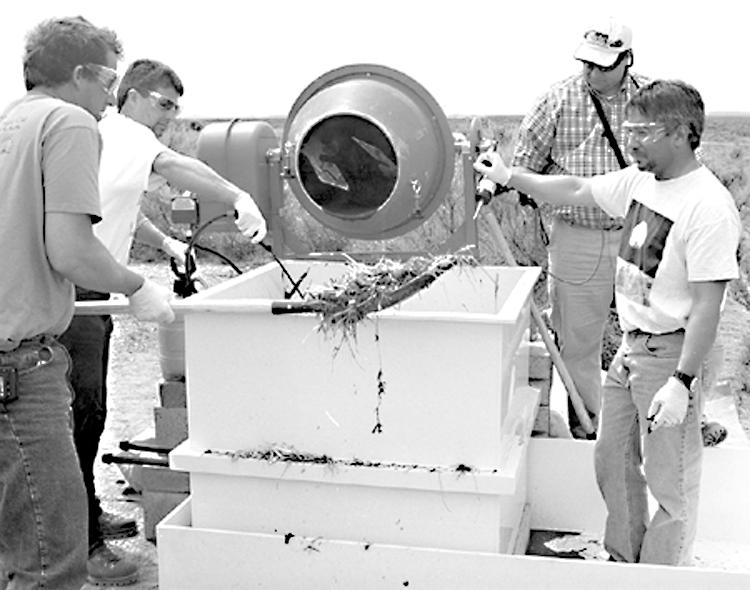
REMEDIATING CONTAMINATED SOIL AT THE IDAHO NATIONAL LABORATORY.

TWO INL SCIENTISTS, FRANCISCO ROBERTO AND COREY RADTKE, EARNED A PATENT FOR A UNIQUE METHOD OF REMEDIATING SOIL CONTAMINATED WITH RESIDUES FROM EXPLOSIVES. THE ADDITION OF ACETONE-A MAIN INGREDIENT IN NAIL POLISH REMOVER-PRODUCES A MIX FOR COMPOSTING CONTAMINATED SOIL THAT LEAVES THE SOIL SAFE AND NON-TOXIC.